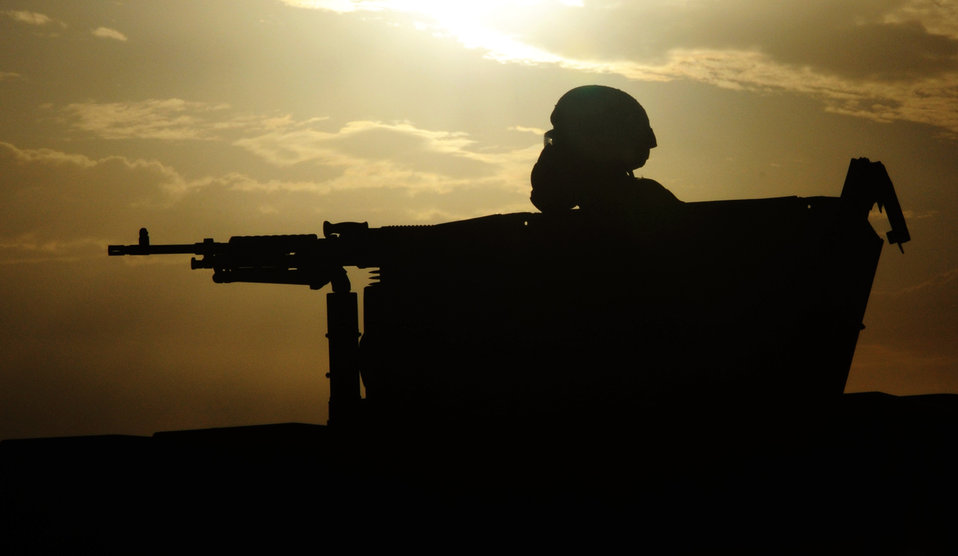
On guard

A gunner in a Humvee from the 39th Security Forces Squadron stands ready for action during an exercise June 24, 2010 at Incirlik Air Base, Turkey. Exercises are held often to keep Airmen trained and ready for real-world situations.